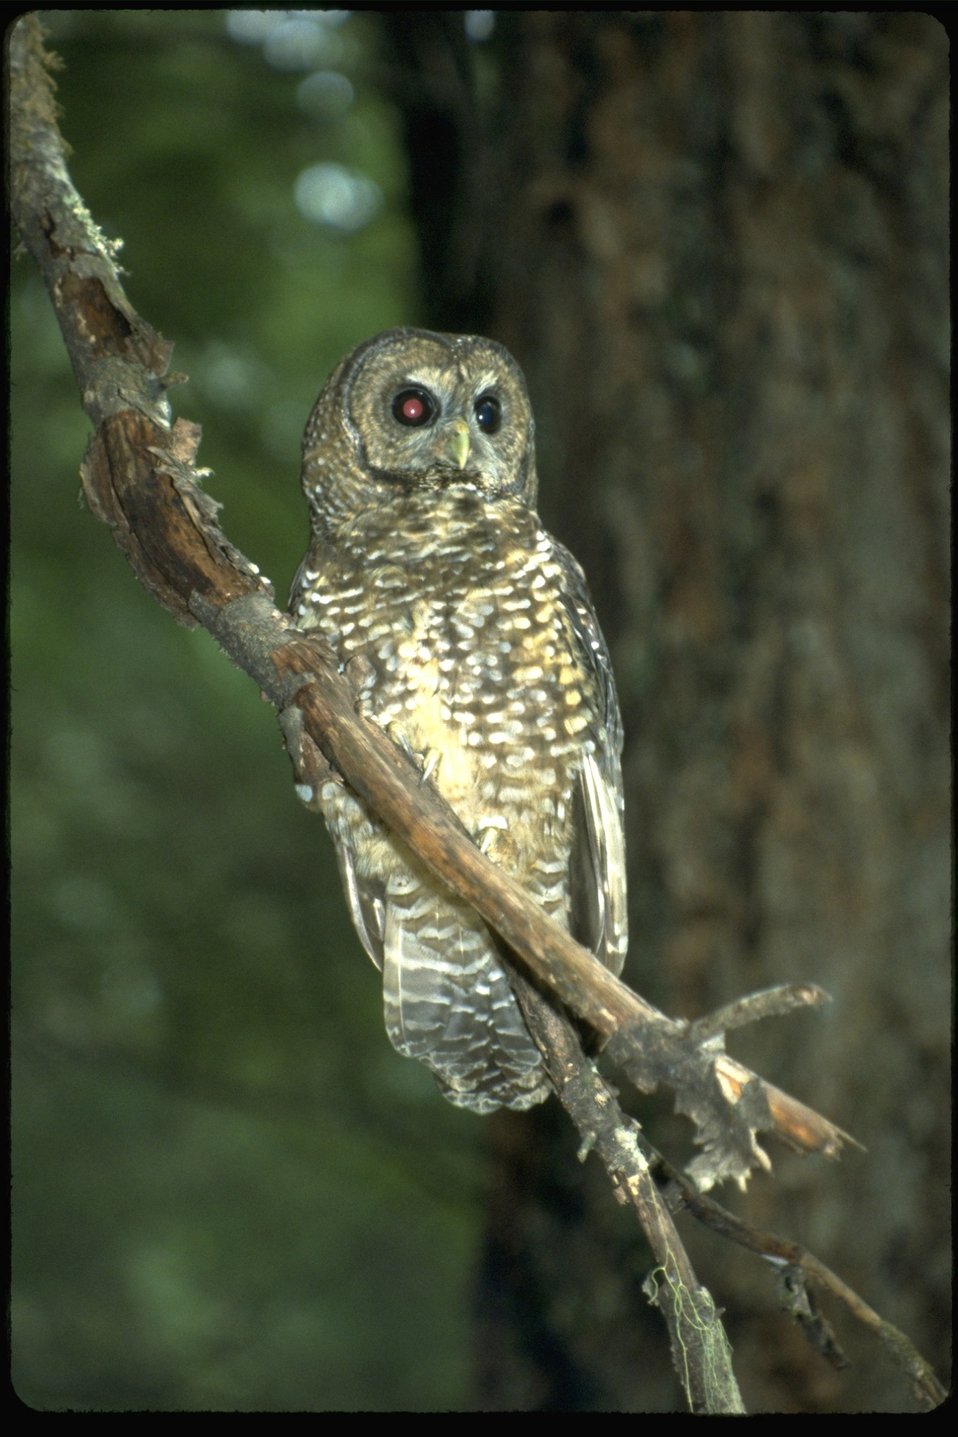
Closeup of Northern Spotted Owl in tree.